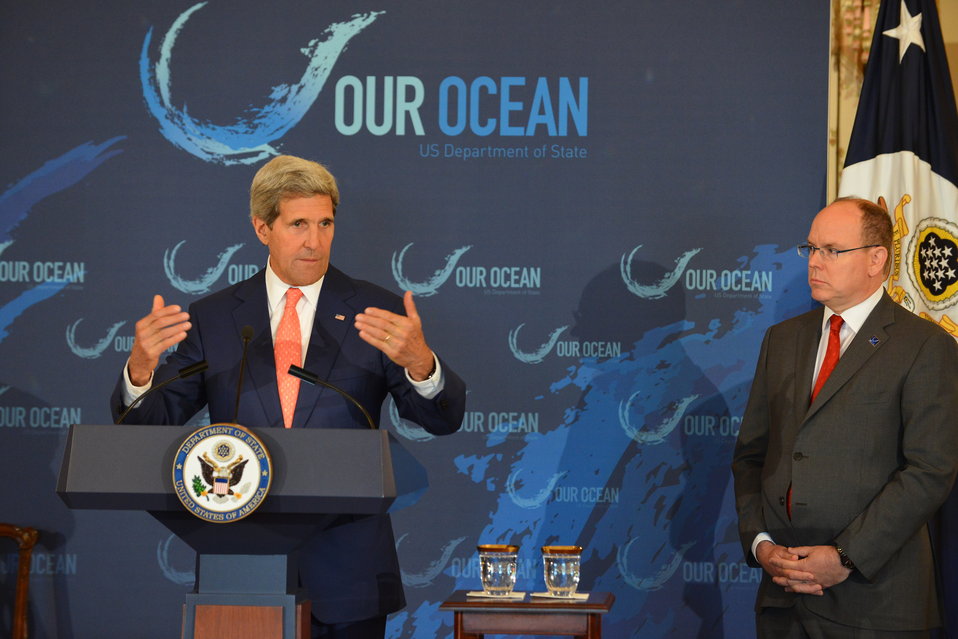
Secretary Kerry Delivers Remarks With Prince Albert II of Monaco at the 'Our Ocean' Conference Lunch Discussion

U.S. Secretary of State John Kerry attends and delivers remarks at the “Our Ocean” Conference lunch discussion with Prince Albert II of Monaco, at the U.S. Department of State in Washington, D.C. on June 16, 2014.